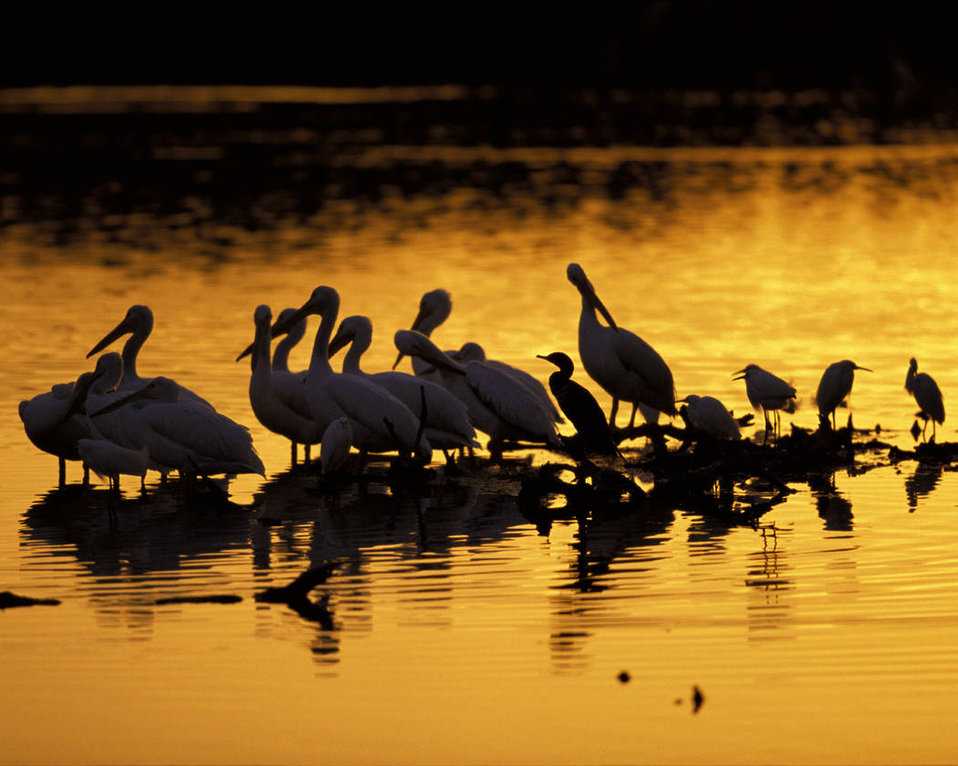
J.N. Ding Darling National Wildlife Refuge

Photo credit: USFWS/George Gentry

In populated coastal areas, wetland migration is often constrained by land development and shoreline stabilization measures. These conditions can result in the crowding of foraging and bank-nesting birds and the loss of crucial coastal habitat for certain species